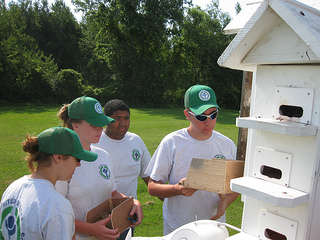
YCC students checking purple martin houses

U.S. Fish and Wildlife Service